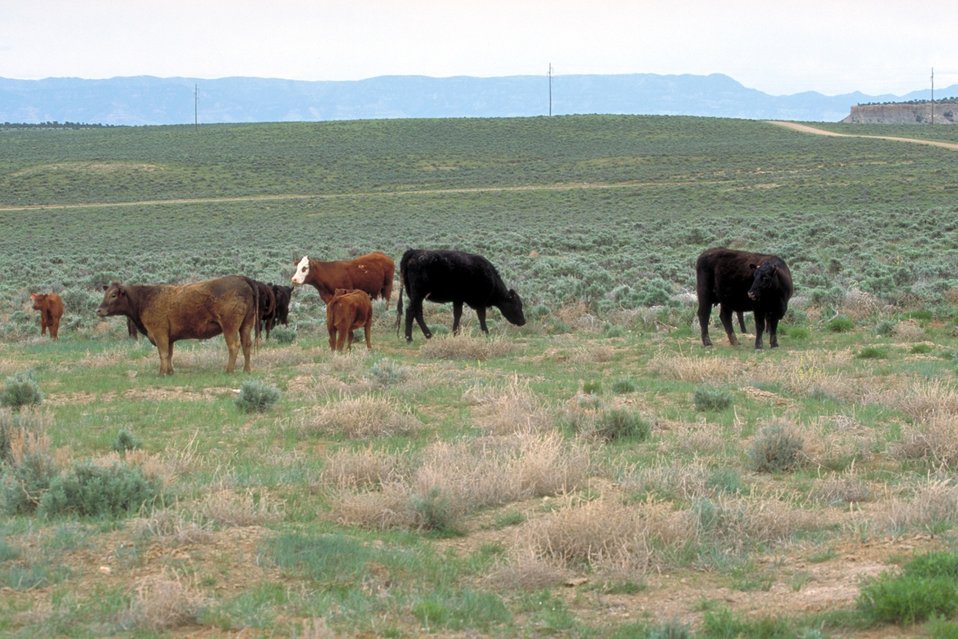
Livestock grazing on BLM lands near Price, Utah.